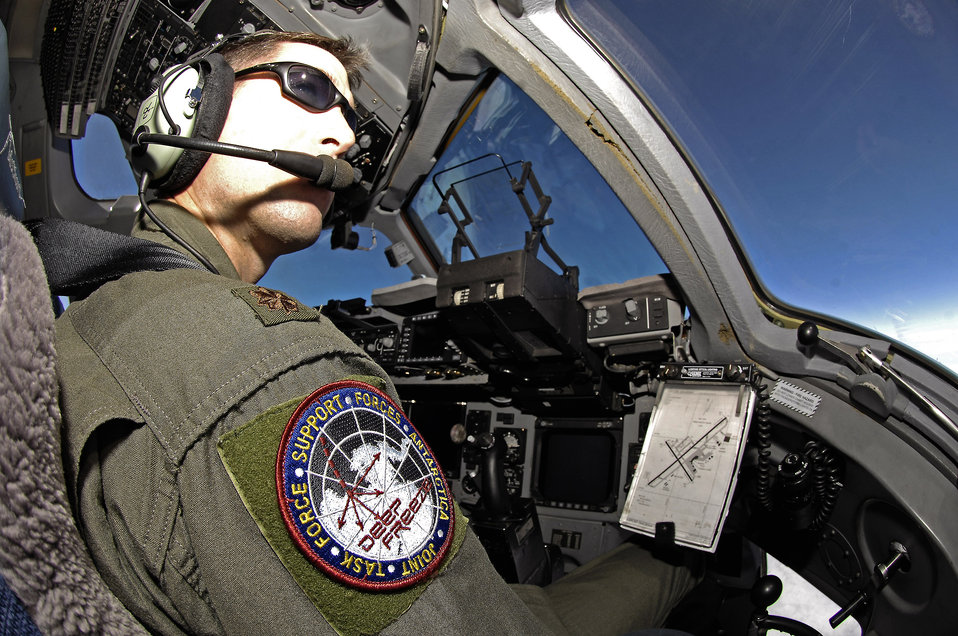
Successful Deep Freeze season comes to an end

Maj. Jason Allen looks out over the Antarctic ice during the 2008-2009 Operation Deep Freeze season, which came to an end Feb. 28. Major Allen is a Reserve C-17 evaluator pilot with the 97th Airlift Squadron at McChord Air Force Base, Wash.